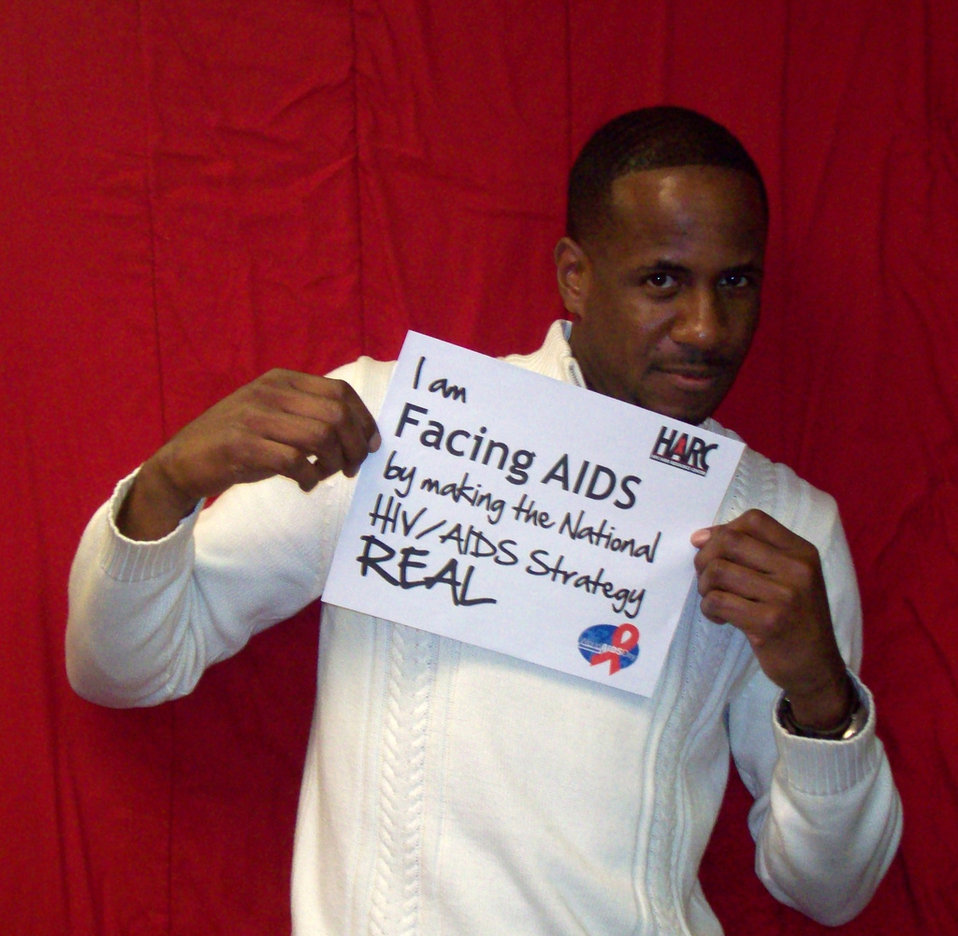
I am Facing AIDS through NHAS-42